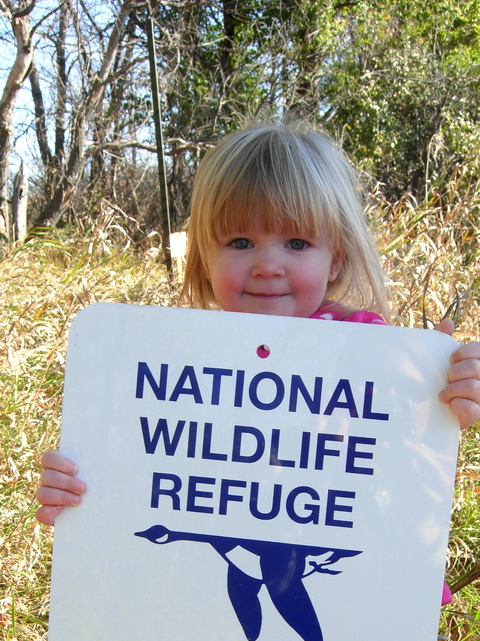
a girl and her goose

Upper Souris National Wildlife Refuge